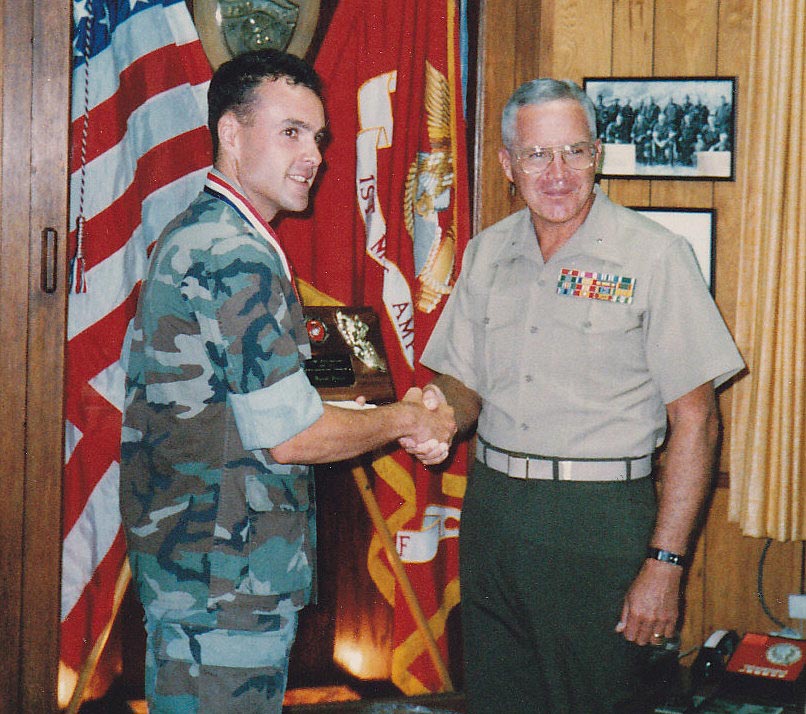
Jeff Hutchinson is a botanist at the San Marcos Aquatic Resources Center in the Southwest Region. He served in the US Marine Corps as a ground support electrical technician from 1984 to 1990. He was stationed in California, Hawaii, Georgia and Japan His favorite military memories are spending three years in Hawaii, meeting his wife, and the comradery he felt with his fellow Marines; something he now feels with his fellow workers in the Fish and Wildlife Service.